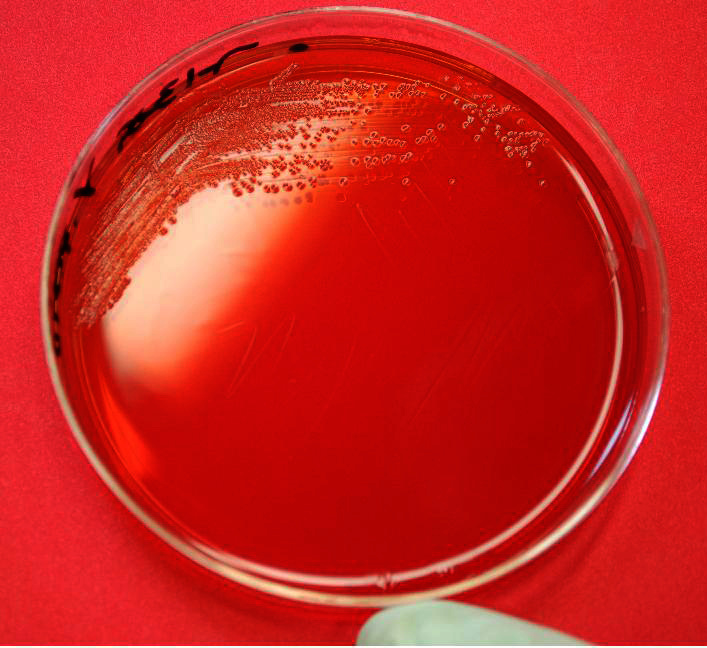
This image depicts a Petri dish containing a MacConkey agar medium, which had been inoculated with Gram-negative Yersinia pestis bacteria. Y. pestis is the pathogen responsible for causing human plague. This was the appearance of the colonial growth after 48 hours of incubation.